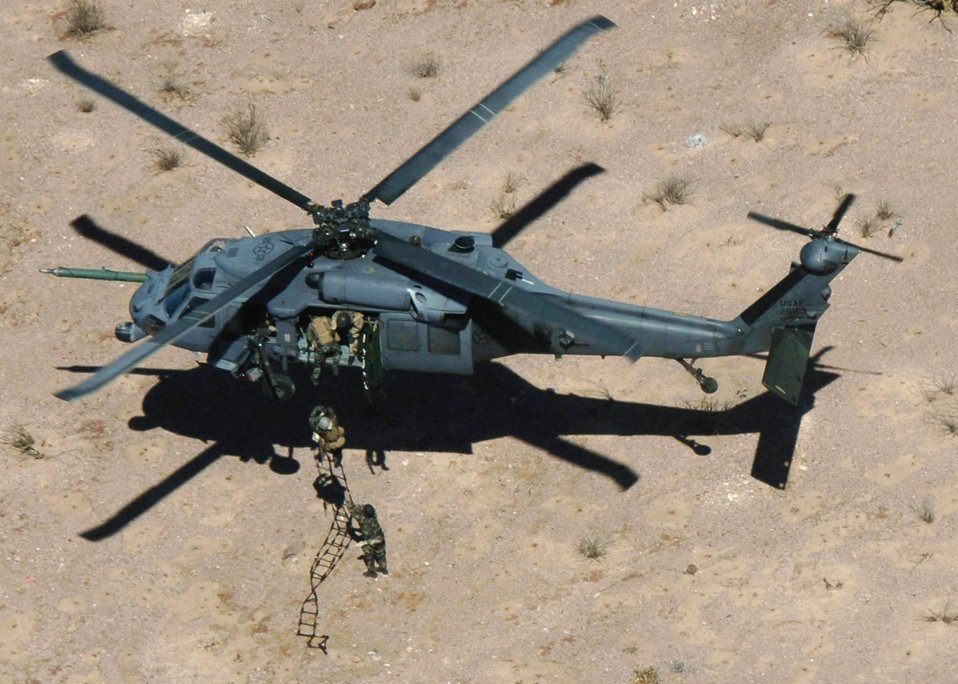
Insertion/extraction training

Pararescuemen from the 48th Rescue Squadron climb down a rope ladder, out of a HH-60 Pavehawk, as part of alternate insertion/extraction training, Monday, March 13, 2006. The 55th Rescue Squadron and pararescuemen assigned to the 48th Rescue Squadron were conducting alternate insertion/extraction training near Davis-Monthan Air Force Base, Ariz.